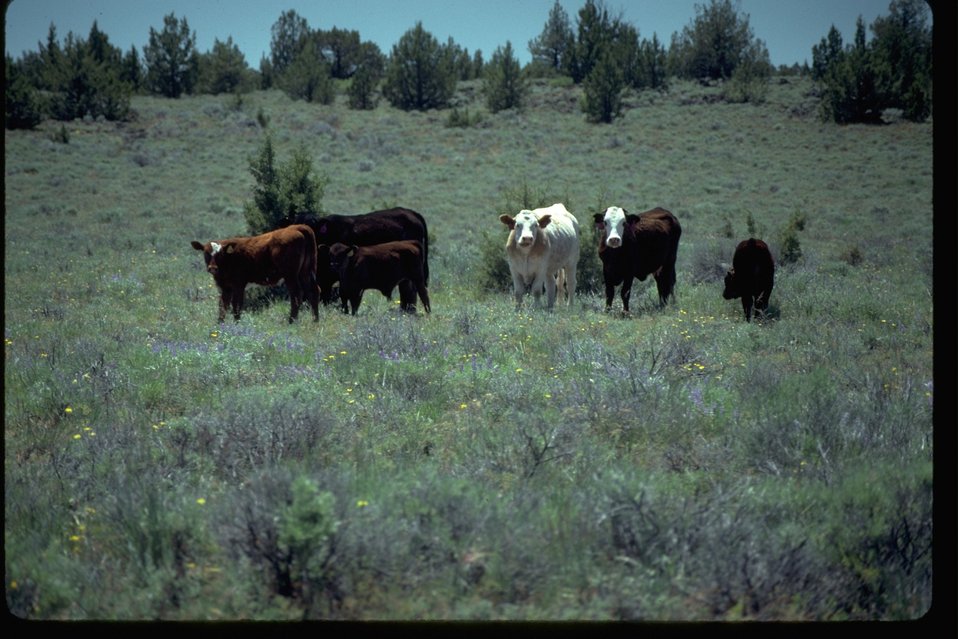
Livestock grazing in the south steens mountain area.